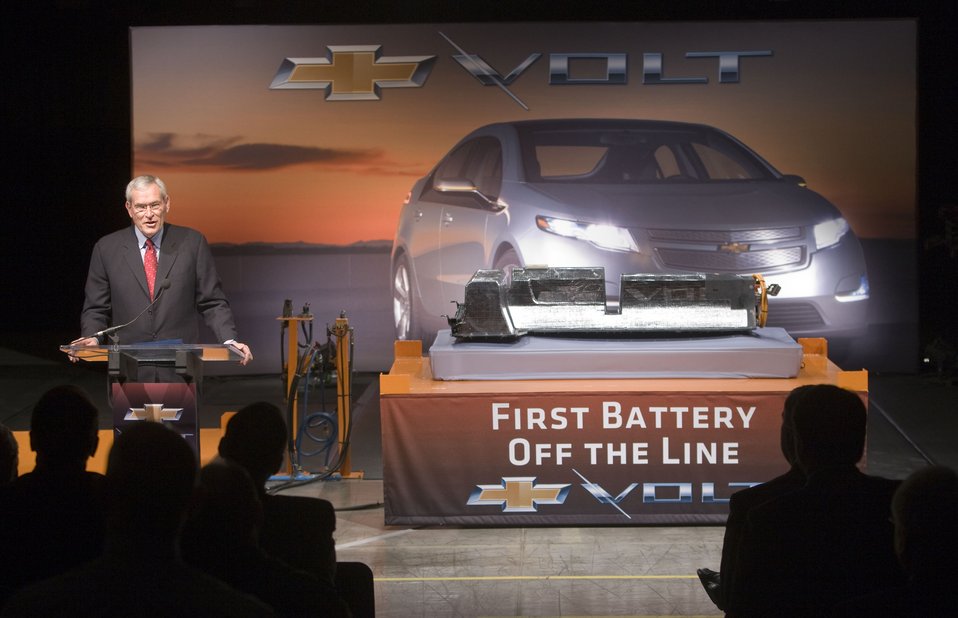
ChevyVoltFirstBattery07

General Motors Chairman and CEO Ed Whitacre addresses the gathering after the first Chevrolet Volt battery came off the assembly line at the GM Brownstown Battery plant in Brownstown Township, Michigan Thursday, January 7, 2010. The facility is the first lithium ion battery pack manufacturing plant in the U.S. operated by a major automaker.